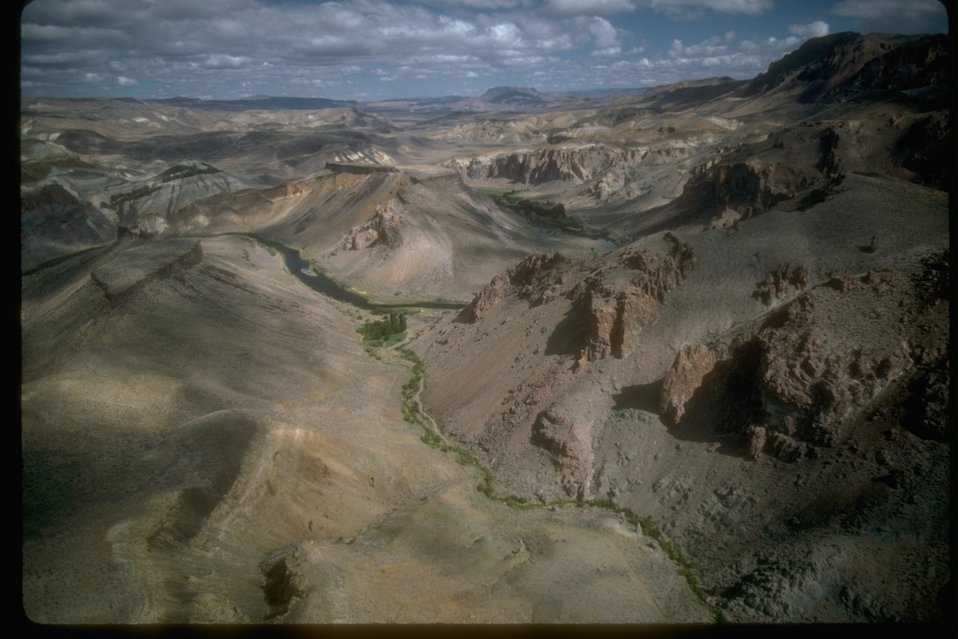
Arial View of the Birch Creek Historical Ranch.